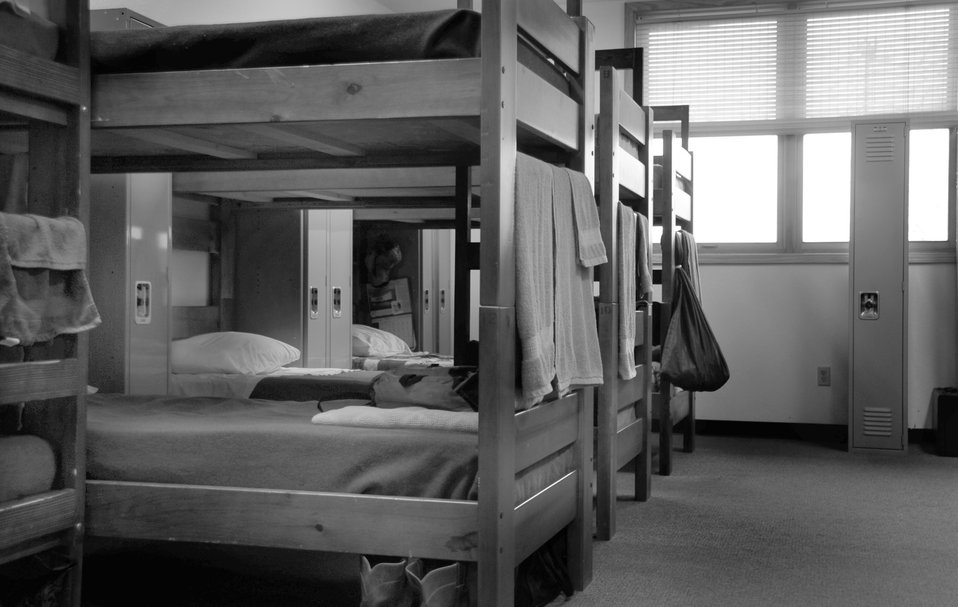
We STILL want you

Homeless veterans can find shelter from the cold winter weather inside the Cornerstone Rescue Mission in downtown Rapid City, S.D. The mission aids homeless veterans by giving them the opportunity to regain control of their lives.